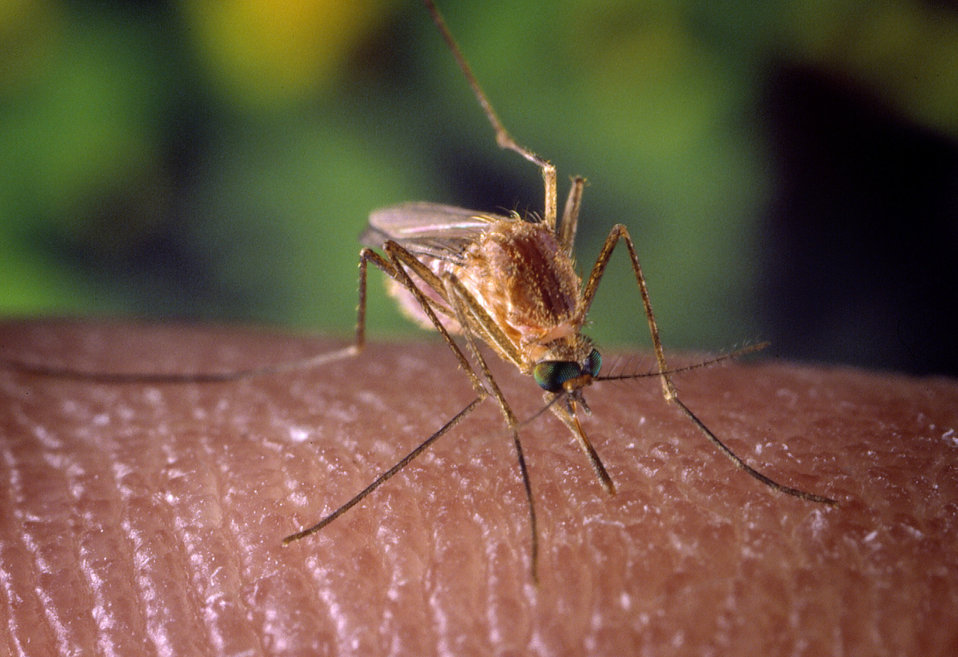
A Culex quinquefasciatus mosquito on a human finger.